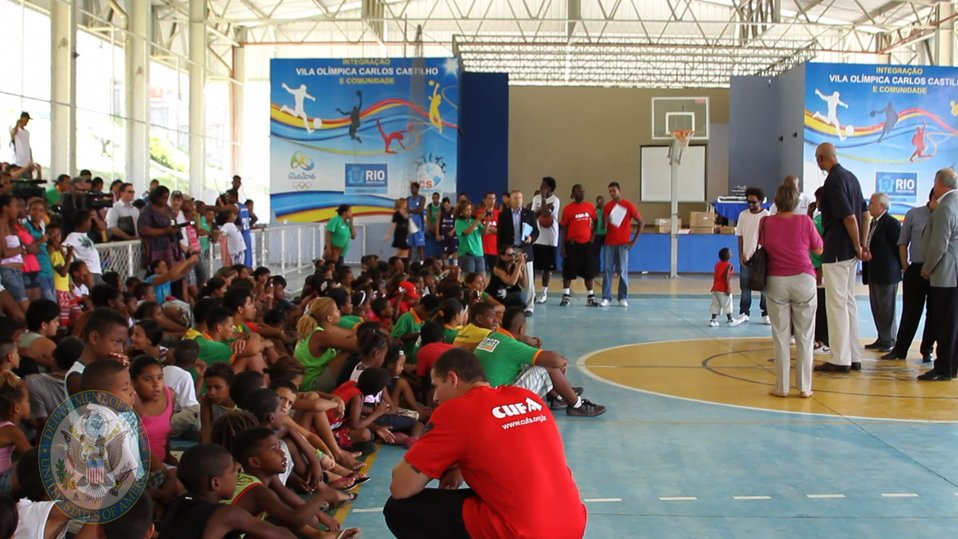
Global Cultural Ambassador Kareem Abdul-Jabbar Engages Youth

Hall-of-Famer and Global Cultural Ambassador for the U.S. Department of State Kareem Abdul-Jabbar discusses the importance of education, social and racial tolerance, cultural understanding, and using sports as a means of empowerment with youth in Rio de Janeiro, Brazil, on January 26, 2012.